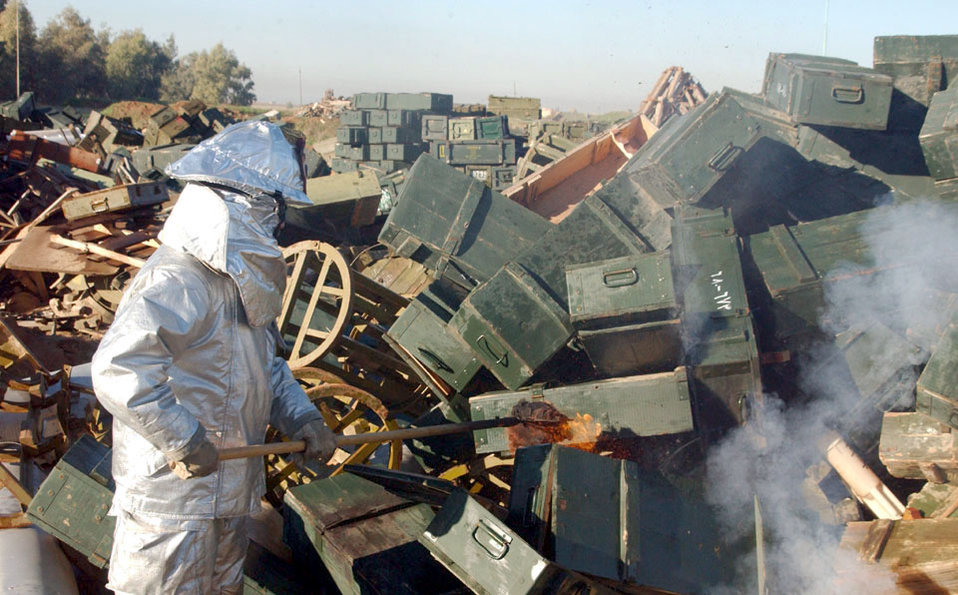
Cleaning up

KIRKUK AIR BASE, Iraq -- A firefighter initiates a controlled burn of a mountain of trash collected from areas throughout the weapons storage area. Members of the 355th Expeditionary Maintenance Squadron conducted a massive clean-up effort to make the area safe and functional.